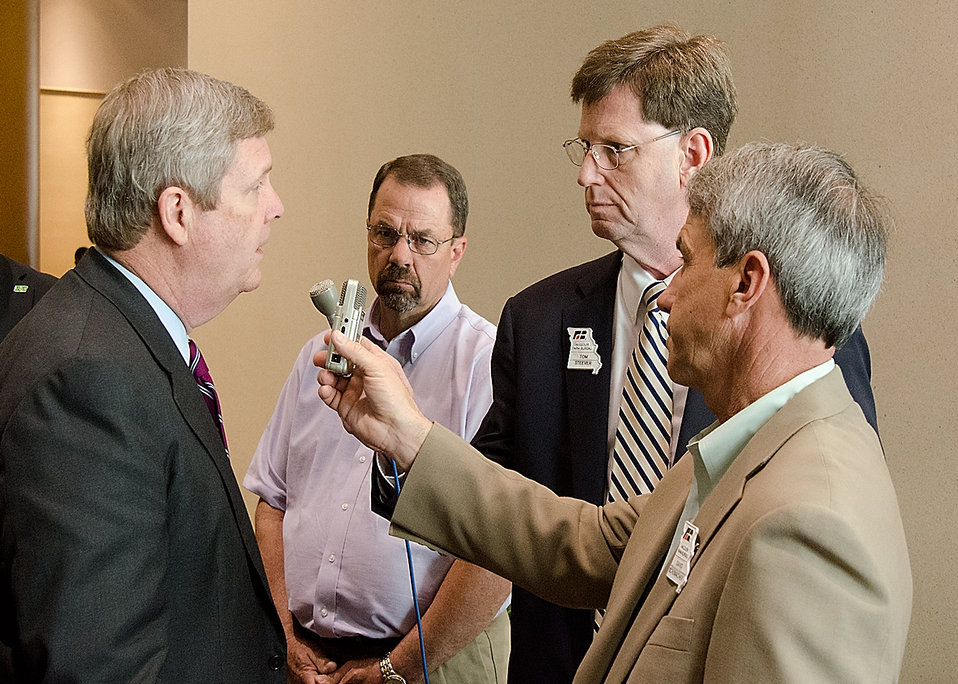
(L to R) Agriculture Secretary Tom Vilsack, Missouri Farm Bureau Dwayne Schad, Brownfield Ag News For America and President National Association of Farm Broadcasters, Tom Steever, and KTRS Radio, St. Louis, MO, Dave Schumacher. Steever and Schumacher had a few questions for Secretary Vilsack after his interview with Agritalk Host Mike Adams during a meeting with the Missouri Farm Bureau in Washington, D.C., on Tuesday, March 20, 2012. Agritalk, The Voice of Rural America is a radio network based in St. Louis, Missouri reaching out to the American Mid-West.